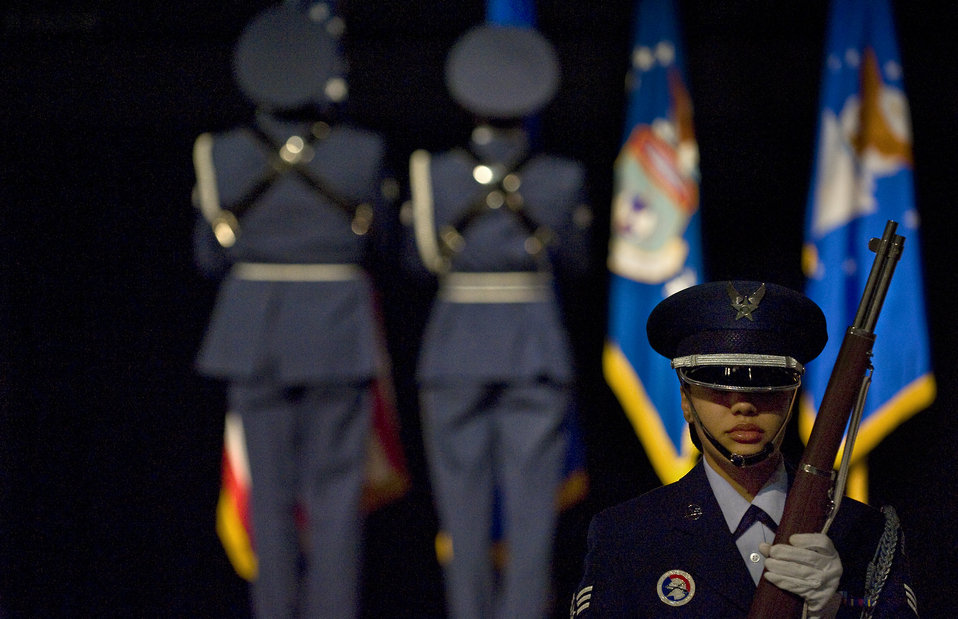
Museum opens exhibit dedicated to 'Warrior Airmen'

Honor guard members from Wright-Patterson Air Force Base post the colors for the opening of the Warrior Airmen Exhibit Jan. 12 at the National Museum of the U.S. Air Force at Wright-Patterson AFB, Ohio.